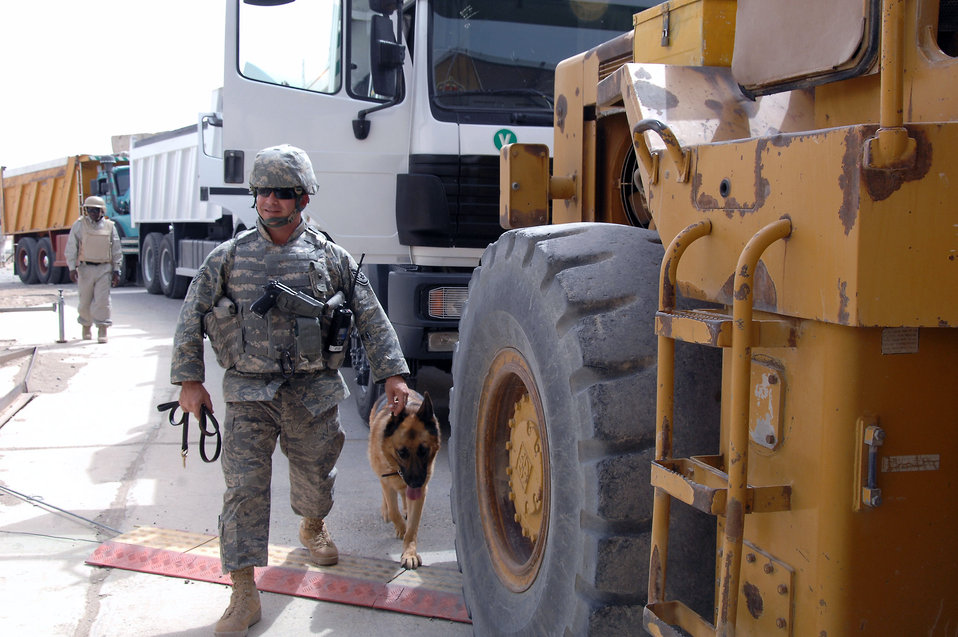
Some joint missions are for the dogs

Staff Sgt. Sean Neisen searches vehicles with his dog, Goro E114, July 8 at the Vehicle Control Center at Ali Base, Iraq. Dog handlers are responsible for ensuring the safety and security of all coalition forces assigned here by searching vehicles that drive onto Contingency Operations Base Adder and Ali Base daily. Sergeant Neisen is a military working dog handler deployed to the 407th Provost Marshal Office from Ramstein Air Base, Germany.